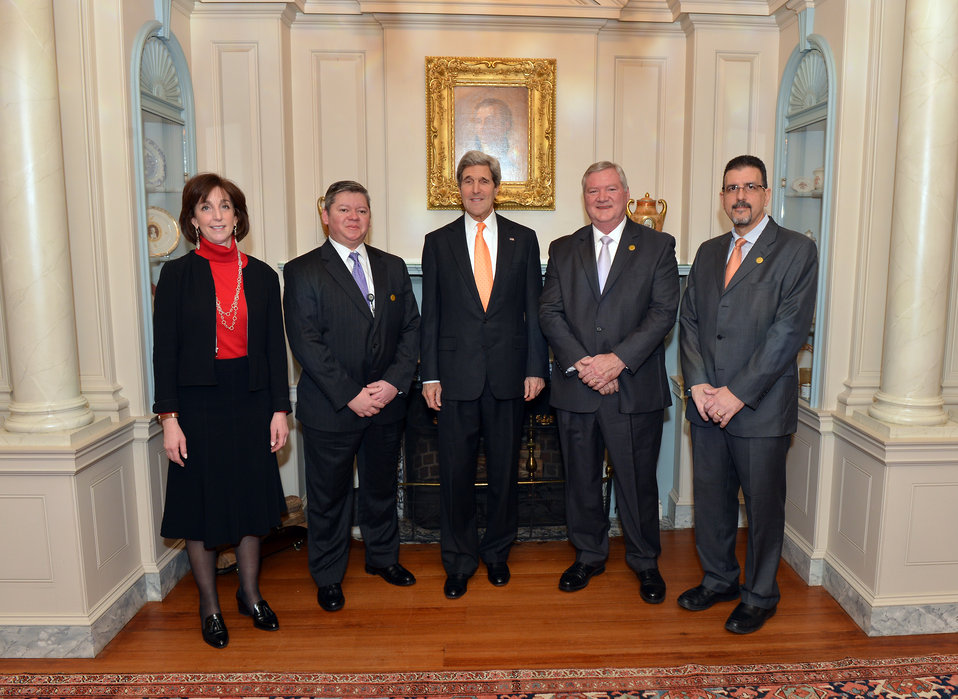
Secretary Kerry Poses for a Photo With Rick Medlin of Fruit of the Loom, Inc. in Honduras

U.S. Secretary of State John Kerry poses for a photo with Rick Medlin, CEO of Fruit of the Loom, Inc. in Honduras, right of the Secretary; Honduran Ambassador to the U.S. Jorge Ramón Hernández Alcerro, left of the Secretary; and Assistant Secretary of State for Western Hemisphere Affairs Roberta Jacobson, far left; at the U.S. Department of State in Washington, D.C., on January 29, 2014. Fruit of the Loom, Inc. in Honduras received the Secretary of State's Award for Corporate Excellence in the large business category.